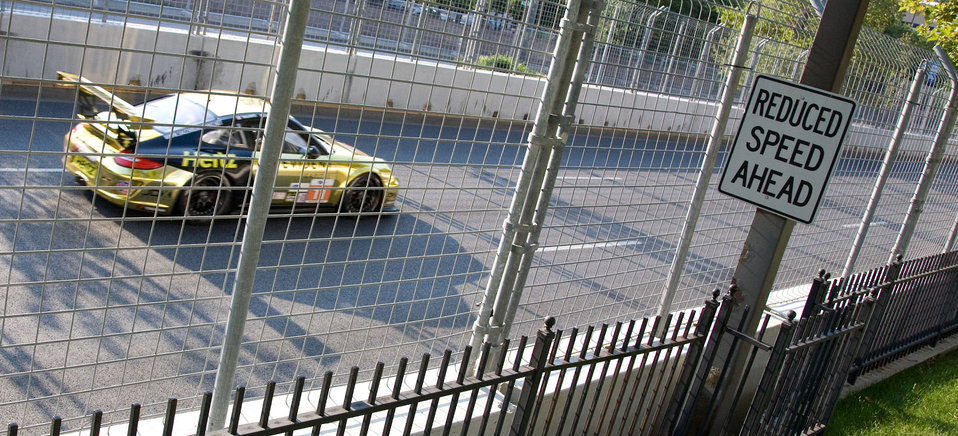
Porsche GT3 race cars (GT Challenge class) of the the American Le Mans Series (ALMS) motorsport challenge practice for thier race, during the Baltimore Grand Prix, on the streets of downtown Baltimore, MD on Friday, August 31, 2012, Labor Day Weekend. ALMS says they are “the Global Leader in Green Racing by being the only racing series recognized to comply with the Green Racing protocols developed by the U.S. Department of Energy (DOE), the U.S. Environmental Protection Agency (EPA) and Society of American Engineers International (SAE).” Instead of high-octane gasoline all the cars in the series uses one of 5 different forms of energy (system). Clean diesel, E85, E10, isobutanol or hybrid energy technology. The specific hybrid system, used by the Porsche GT3 cars, are a (battery-less) flywheel-based Kinetic Energy Recovery Systems. These organizations are accelerating technology development at speeds up to 200 mph, in 650-700 horsepower race cars that are based on two groups of cars; the purpose built prototype race cars and the GT ( Grand Touring) cars based on production sports cars that you can see in showrooms. From these groups, there are five classes of cars, all of which race at the same time during the race events.
The U.S. Department of Agriculture (USDA) focuses on renewable fuel sources that are profitable and sustainable. 2011 accomplishments include research and planning for renewable energy and investments in renewable energy production.
- Completed a Biofuels Roadmap proposing a plan of action to meet congressionally mandated RFS2 goals for national biofuels production.
-Coordinated five regional research centers to work on the science necessary to ensure profitable biofuels can be produced from a diverse range of feedstocks across the nation, not just in the Midwest where the industry is already thriving.
-Over three years, USDA invested about $320 million to accelerate research on renewable energy ranging from genomic research on bioenergy feedstock crops, to development of biofuel conversion processes and costs/benefit estimates of renewable energy production.
- More than 130 biodiesel and ethanol projects funded by USDA are currently producing almost 3.7 billion gallons of biodiesel and ethanol annually, enough fuel – in equivalence to gasoline – to keep five million vehicles on the road every year.
-We are supporting efforts to build five biorefineries to produce advanced biofuels in states from Florida and Michigan to New Mexico, with investments worth about $310 million. We are supporting facility upgrades and feasibility studies for advanced biofuels projects in every region of the country.